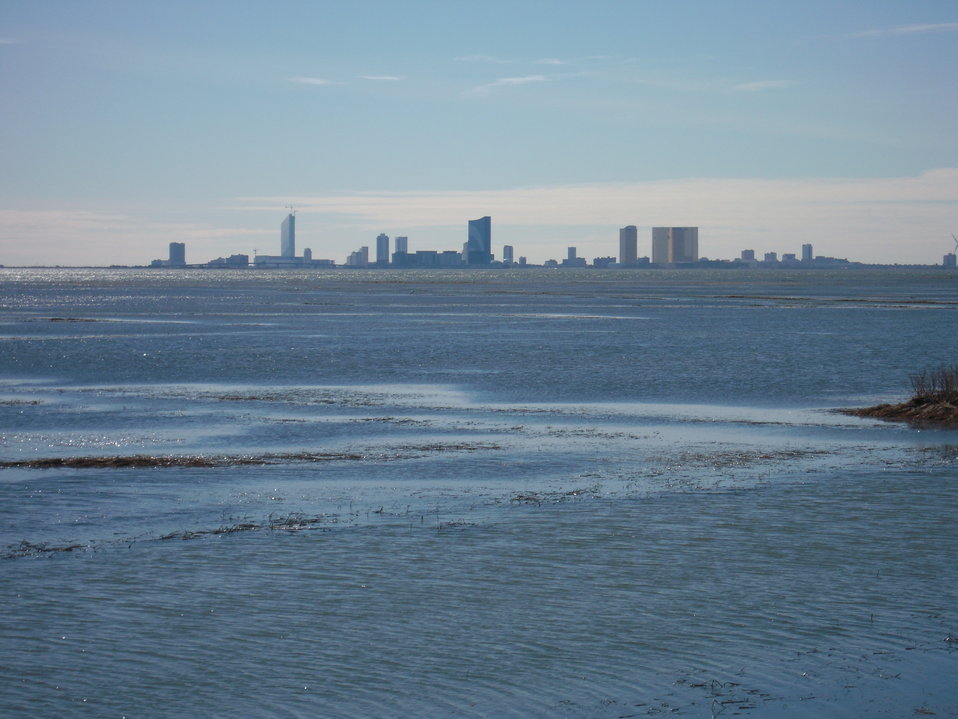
Refuge and Atlantic City